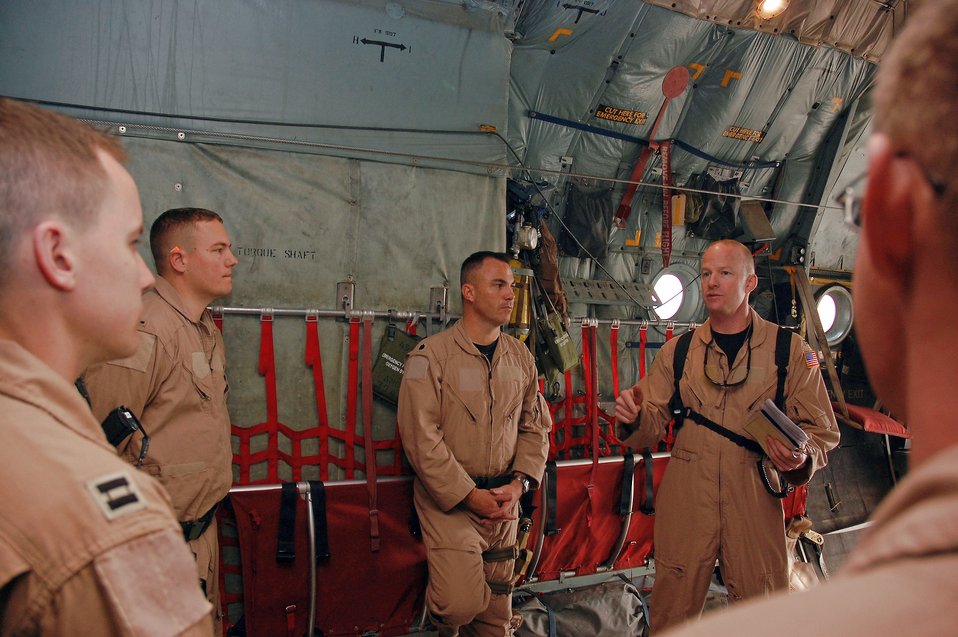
Airmen aid coalition ground forces one leaflet at a time

Col. Gary Goldstone goes over safety procedures related to a leaflet airdrop mission prior to takeoff March 2 from a Southwest Asia air base. The mission is part of leaflet air drop mission supporting the Australians from Overwatch Battle Group (West)-4 in southern Iraq. Colonel Goldstone is the 386th Expeditionary Operations Group commander.